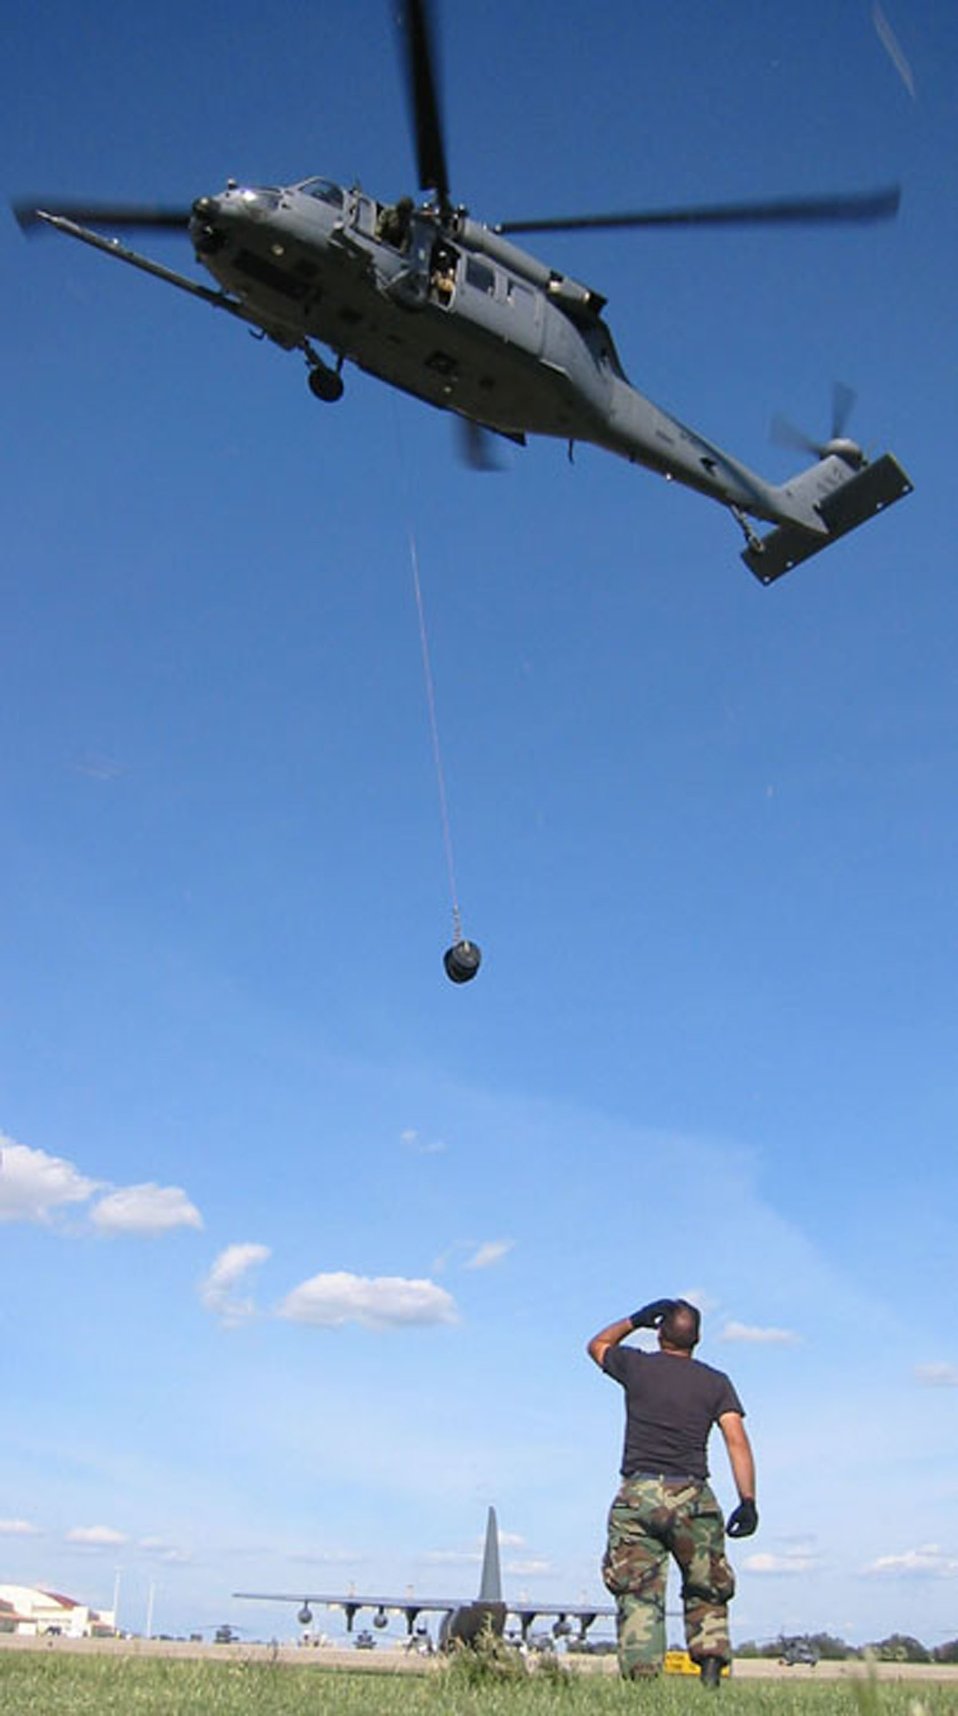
Search and rescue missions underway

RANDOLPH AIR FORCE BASE, Texas -- Senior Airman Ronald Arroyo watches as a helicopter ascends with a 600-pound weight during an operational winch check Sept. 24. Airman Arroyo is a crew chief assigned to the Air Force Reserve's 920th Rescue Wing, Patrick Air Force Base, Fla.